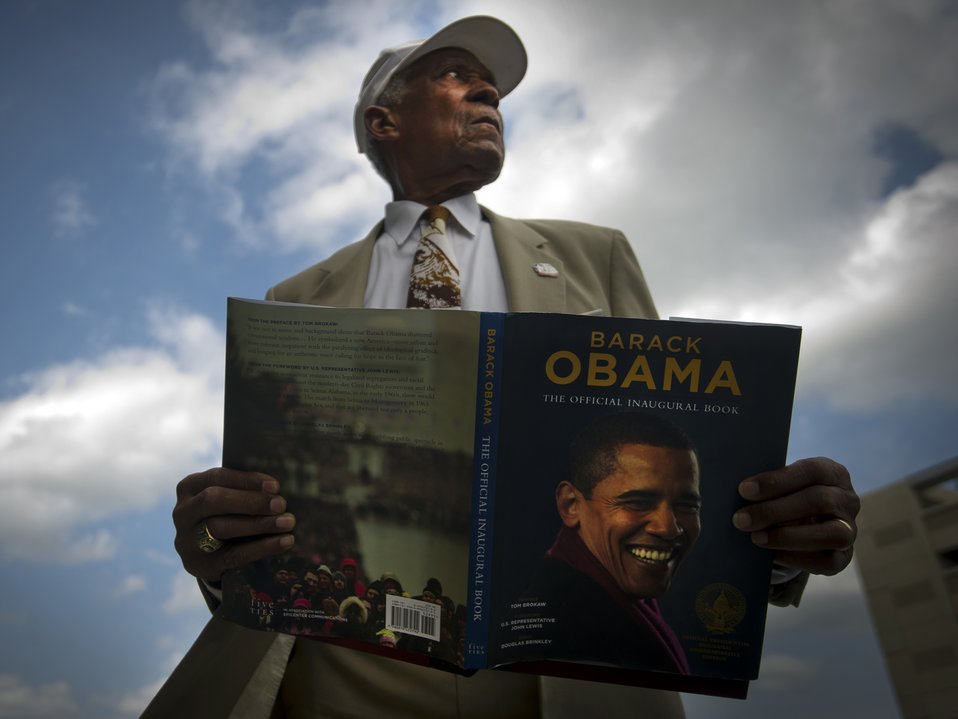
Tuskegee Reunion

Retired Tech. Sgt. George Watson Sr. holds a presidential inauguration book Aug. 4, 2011 featuring himself along with President Barack Obama during the 40th Tuskegee National Convention at the Gaylord National Hotel, in Oxonhill, Maryland. The Tuskegee Airmen meet annually to celebrate the accomplishments of years past with a week of forums, historic displays to remember the lonely eagles and mentorship to attendees. Air Force leaders also meet to discuss issues about diversity and leadership styles.